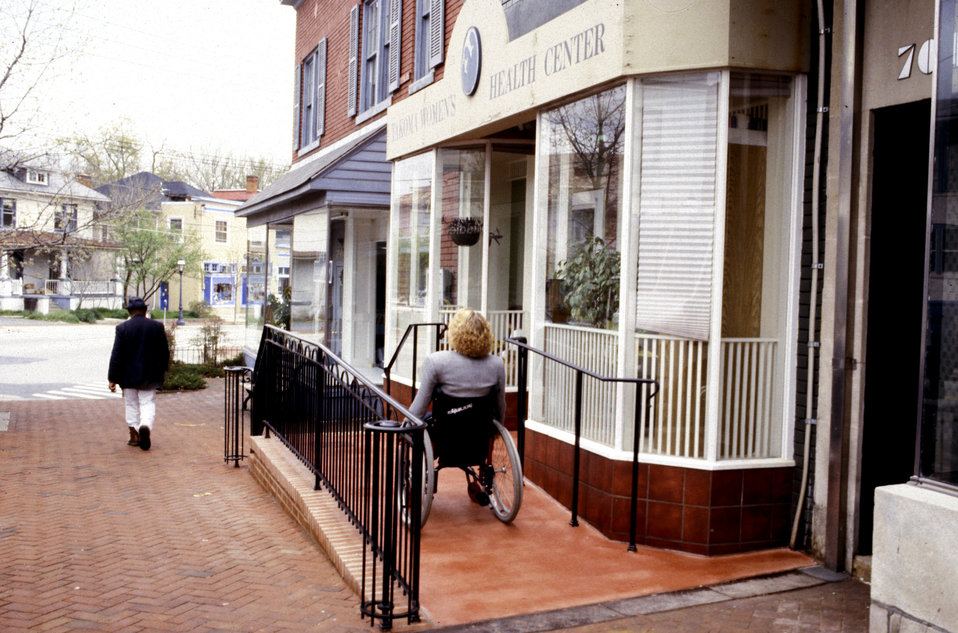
In this 1993 image, the front of a women's clinic revealed a front door that had been accessible via a two-step stoop, which made accessibility an issue for the mobility-challenged visitors (PHIL 9018 - 9021). This prompted the installation of a temporary plywood ramp at first (PHIL 9022 - 9026), which was later replaced by the permanent mortar and brick ramp seen here, as it was being used by a wheelchair-seated visitor (also see PHIL 9028 and 9029). This concrete structure was not the perfect solution, for it lacked adequate maneuvering room near the clinic doorway. It also clearly appeared as an add-on, or after-the-fact solution that protruded into the wide sidewalk, while attempting to blend in with the existing buildings by using brick, colored concrete, and wrought iron rails. Stairs had also been provided.